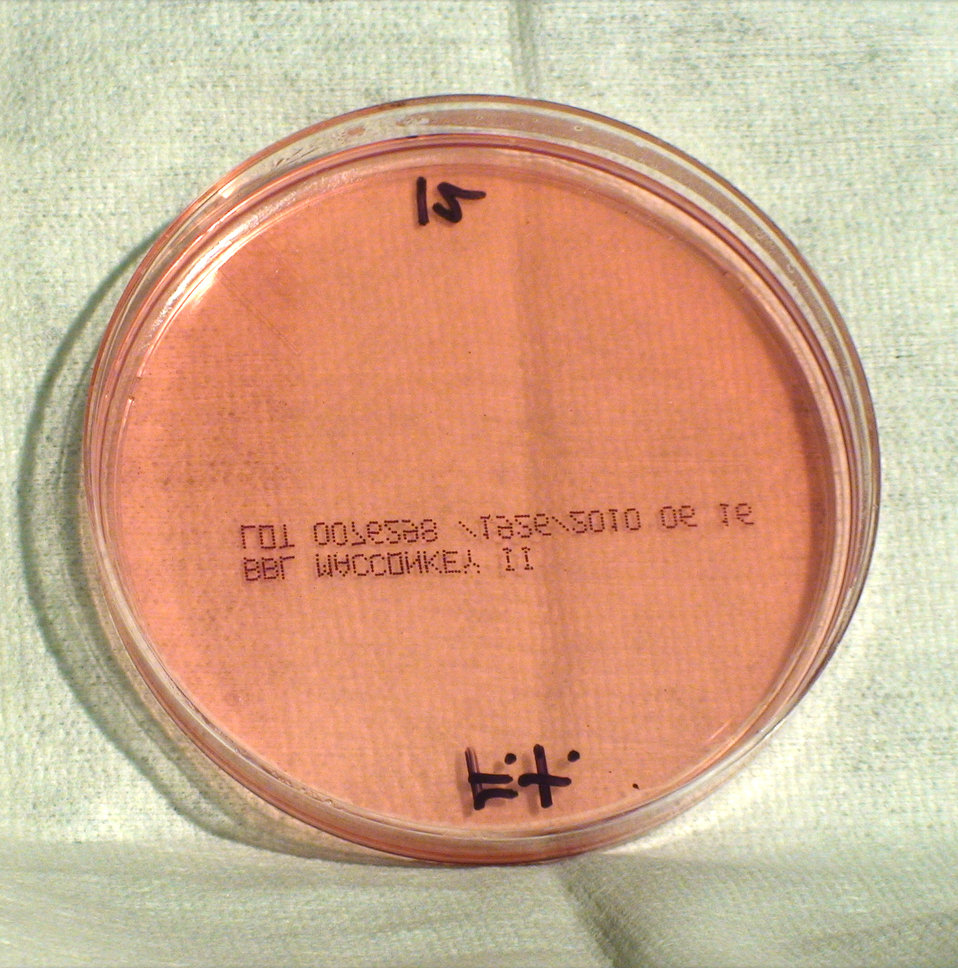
This photograph depicts the colonial morphology displayed by Gram-negative Francisella tularensis bacteria, which was grown on a medium of MacConkey agar, for a 24 hour time period, at a temperature of 37�C. See PHIL 12443, for a closer view of these bacterial colonies. This bacterium is both an animal, and a human pathogen, and is responsible for causing the disease known as tularemia.